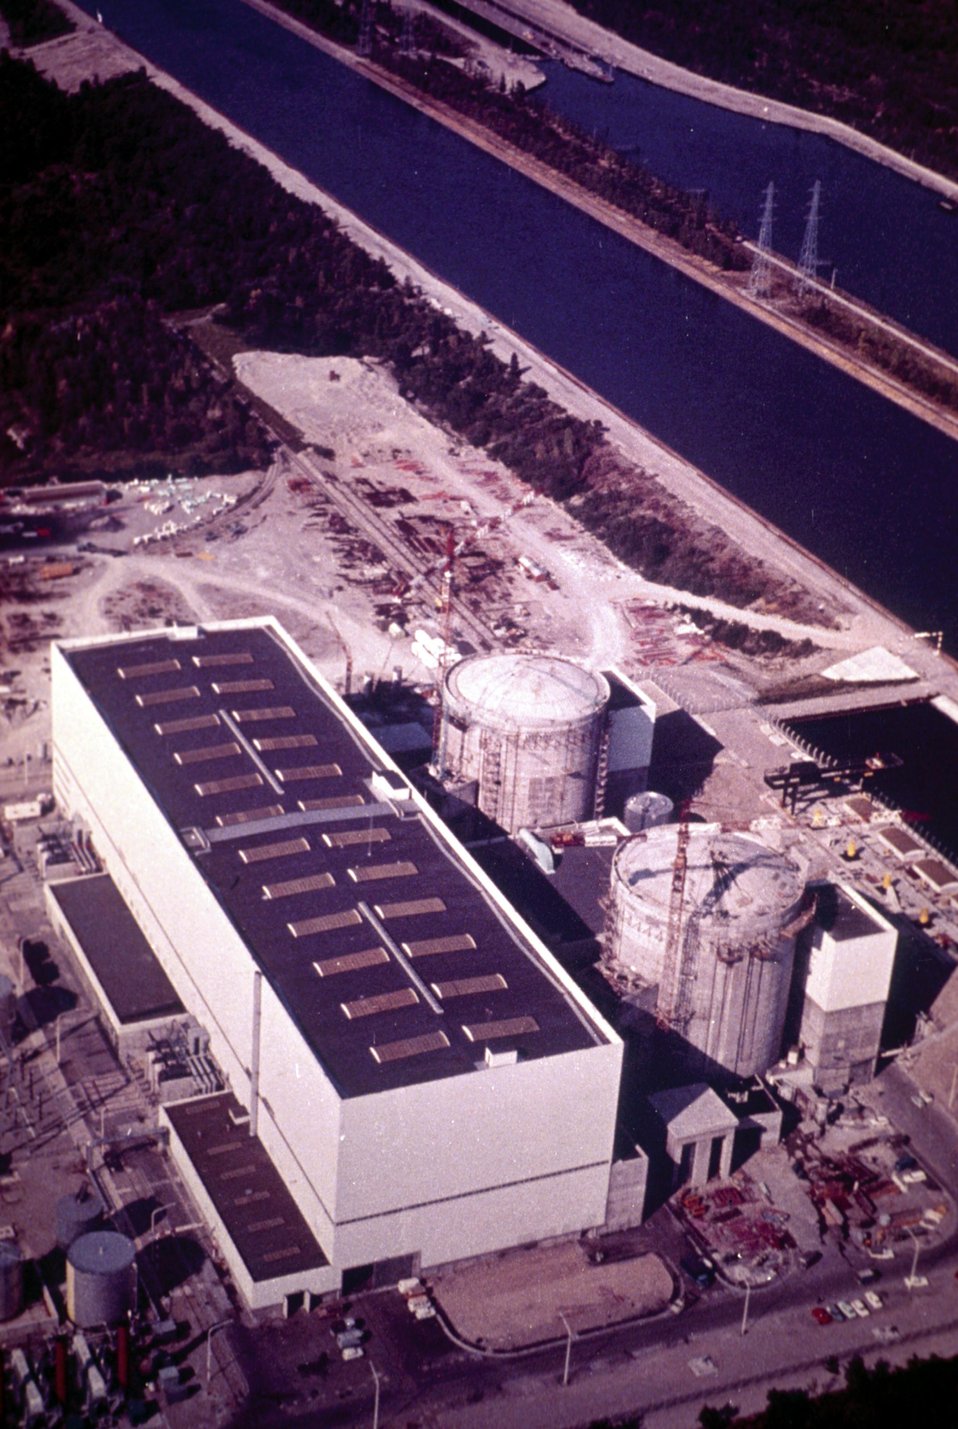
Vue de la centrale de Fessenheim (eau ordinaire pressurisÐe).